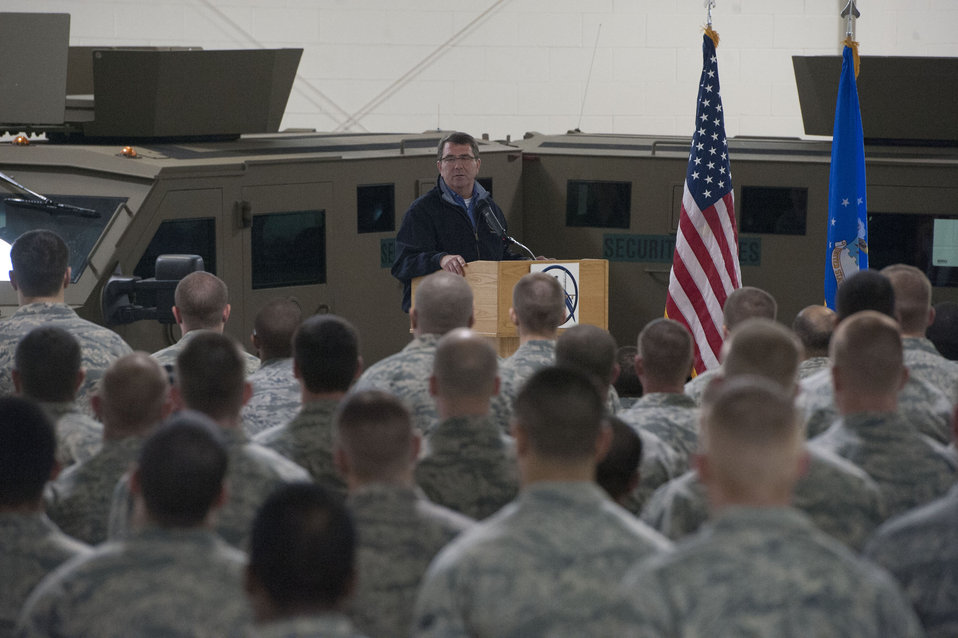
Deputy SecDef

Deputy Secretary of Defense Ashton B. Carter speaks to Airmen at Minot Air Force Base, N.D., Nov 2, 2012. Carter thanked them for their hard and dedicated work.